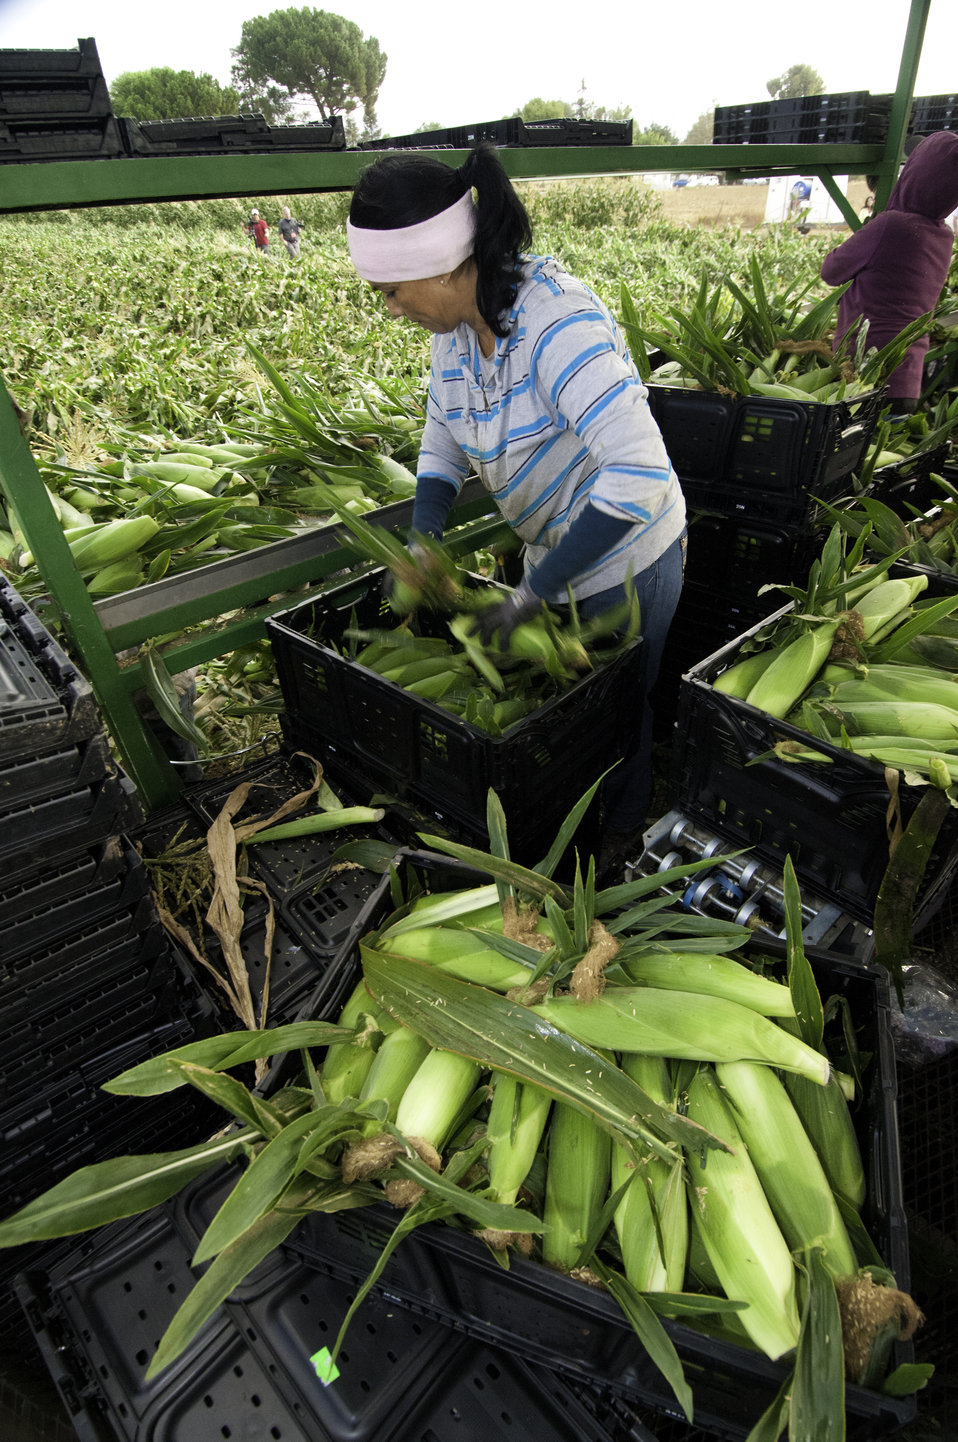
Migrant workers harvest corn on Uesugi Farms in Gilroy, CA on Wednesday, Aug. 28, 2013.